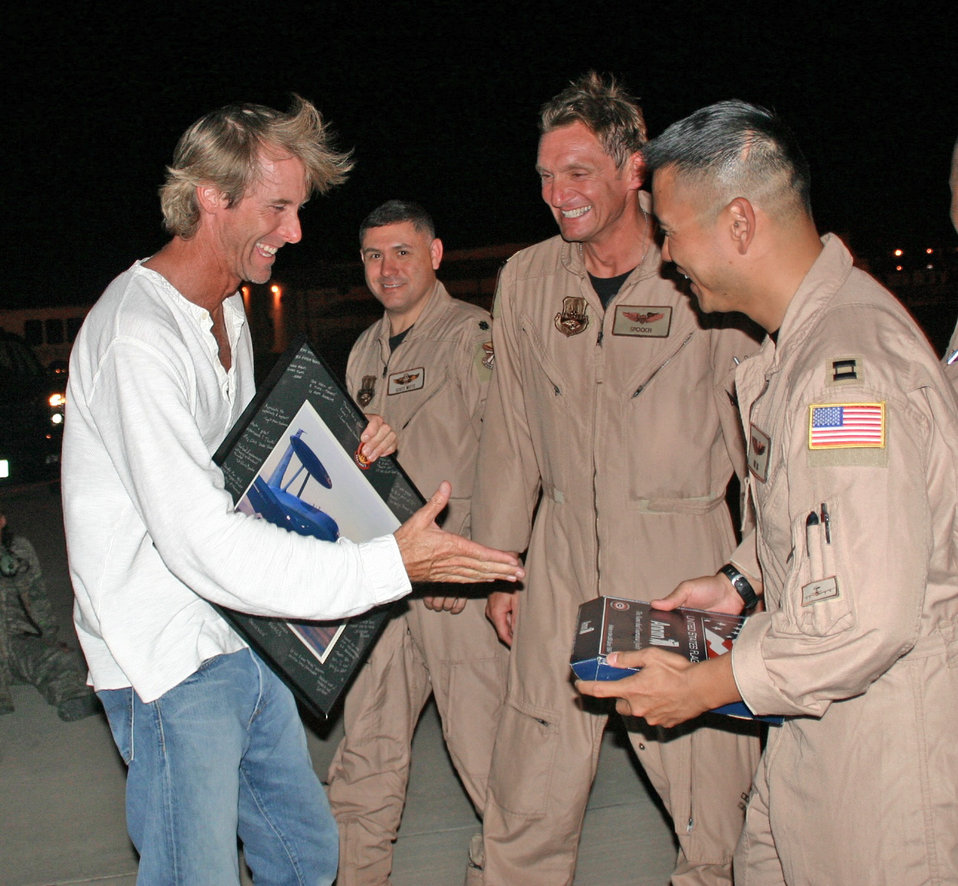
Tinker Airmen make mark in 'Transformers: Revenge of the Fallen'

Lt. Col. Jimmy Warren and Capt. Thomas Ikehara present Michael Bay with a framed picture of the E-3 Sentry and a flag flown on the jet during a combat sortie as a token of appreciation after filming on an E-3. Mr. Bay is the director of